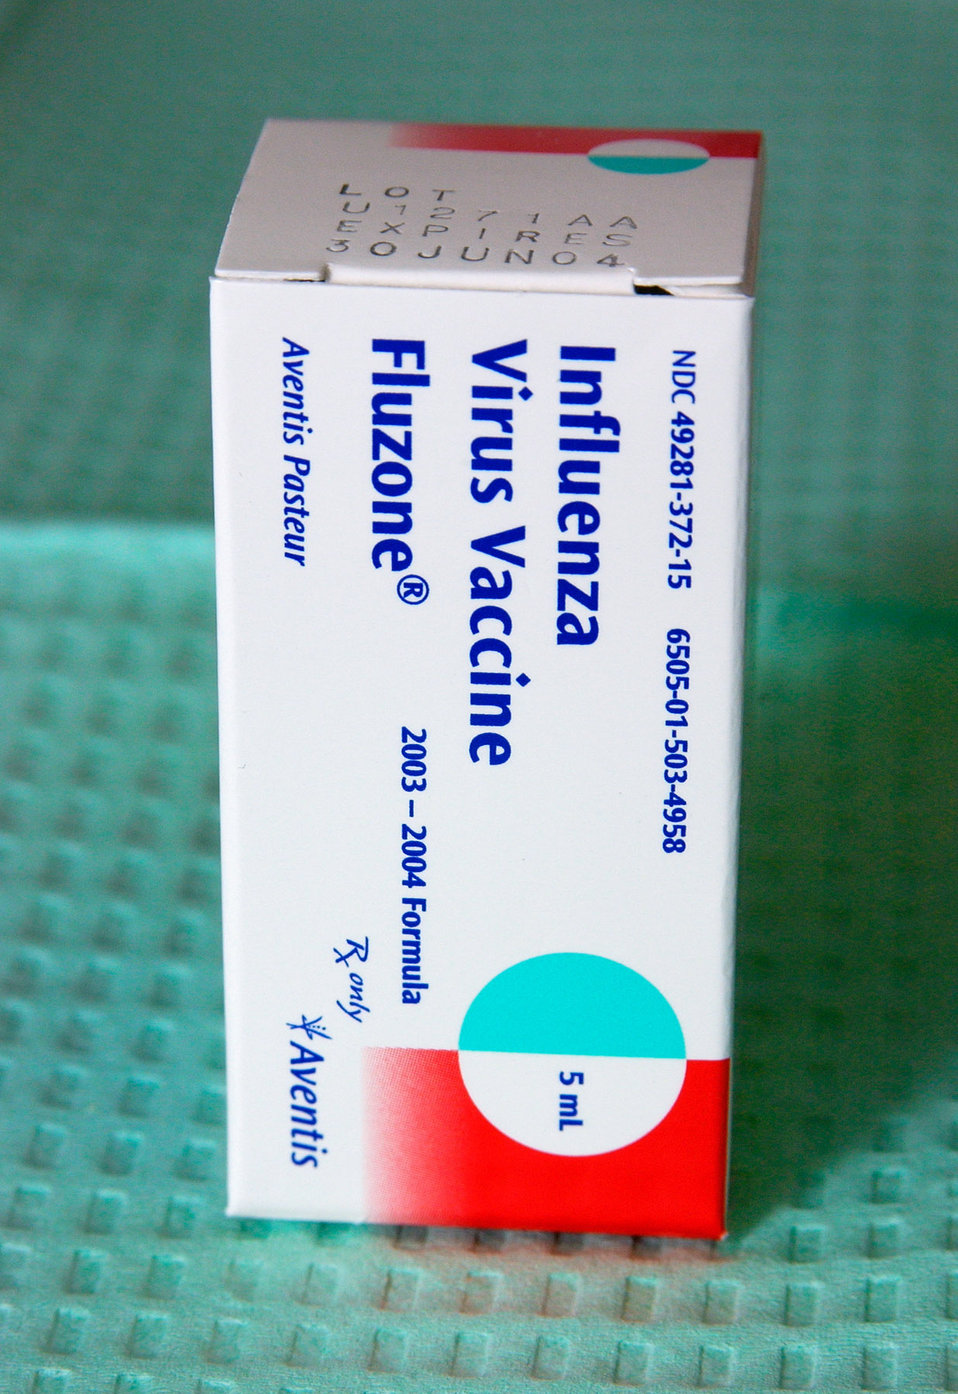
This box contains a 5 ml. vial of the Influenza Virus Vaccine, Fluzone�, distributed by Aventis Pasteur, USA.